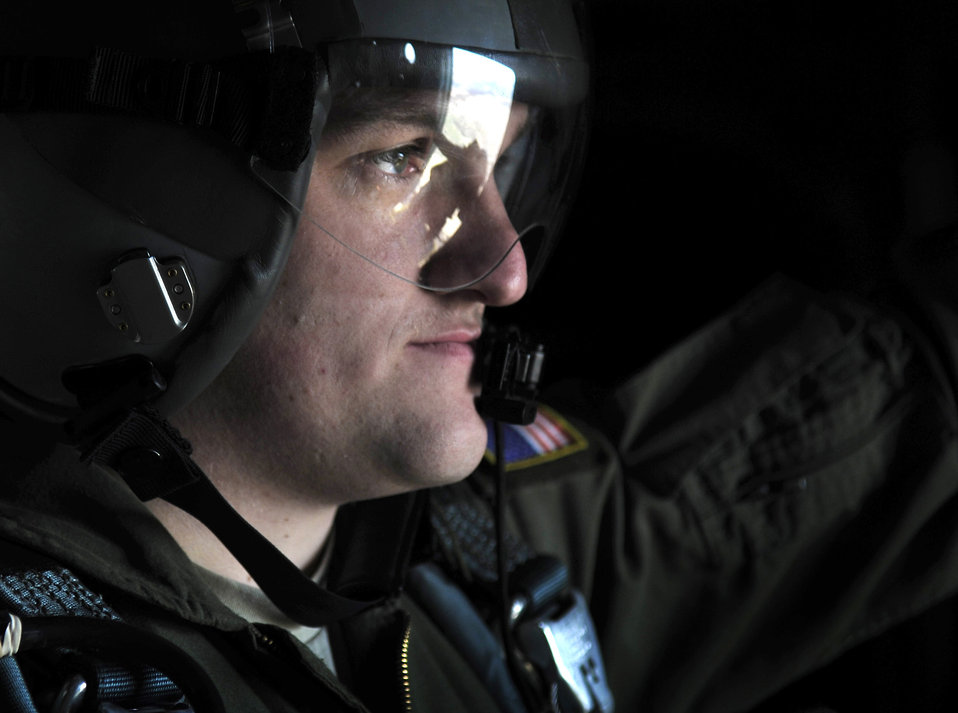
Carpathian Spring 2011

Airman 1st Class Austin Koester relays information to pilots of a C-130J Super Hercules as static line paratroopers prepare to exit for a jump March 18, 2011, over a landing zone near Campia Turzii, Romania. This jump was conducted as part of Carpathian Spring 2011, an exercise where members of the U.S. military joined their Romanian counterparts to learn from one another and strengthen alliances. Airman Koester is a loadmaster assigned to the 37th Airlift Squadron.